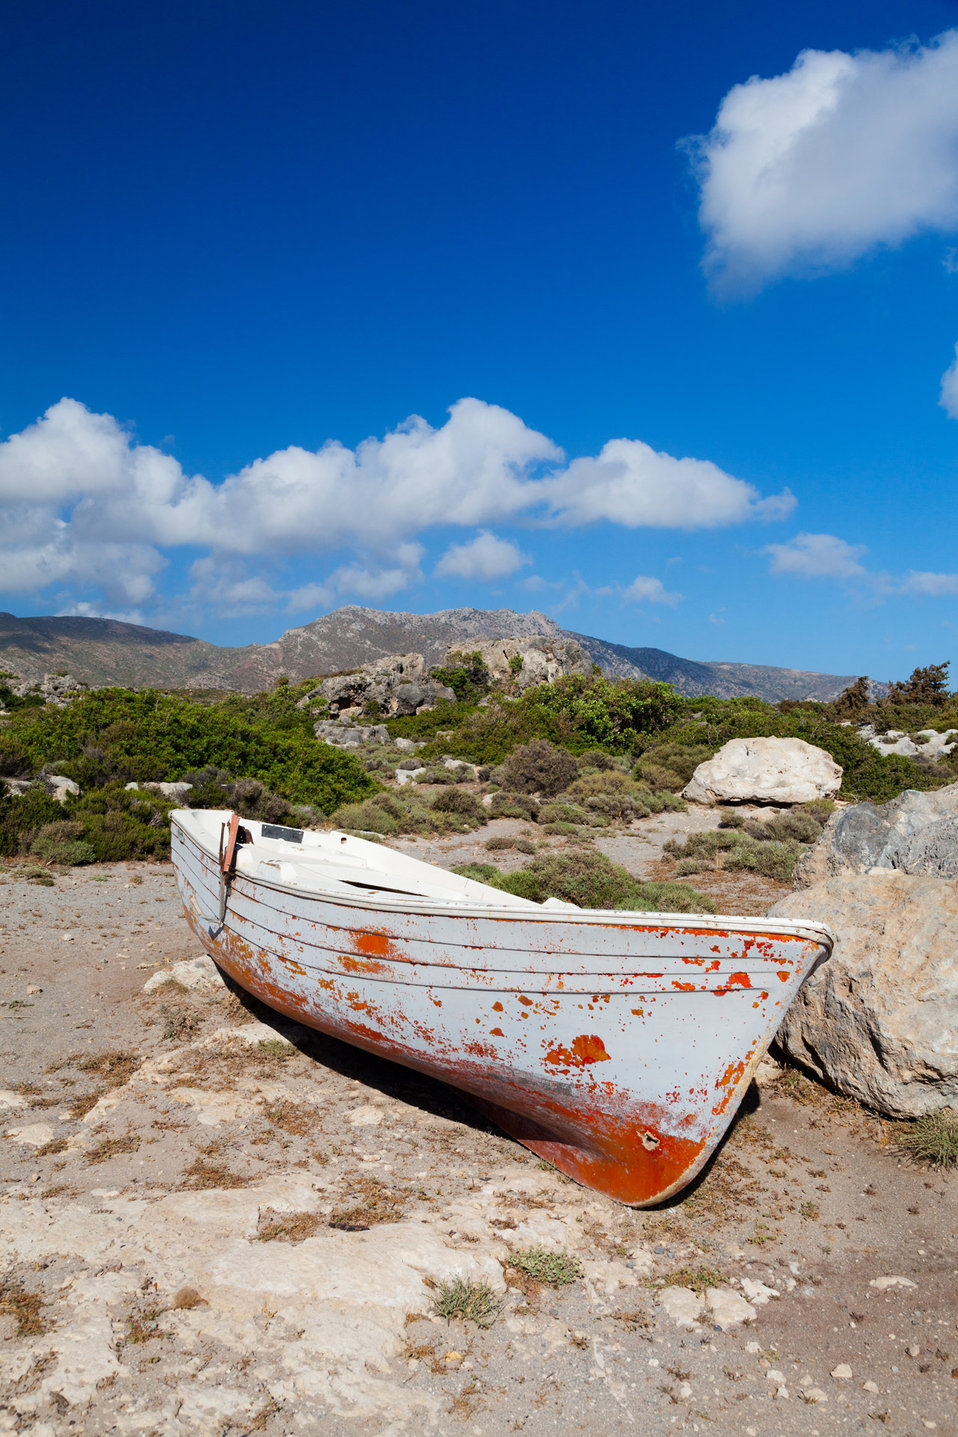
Boat on a dry land

Aging boat on a dry land with mountains in the background.